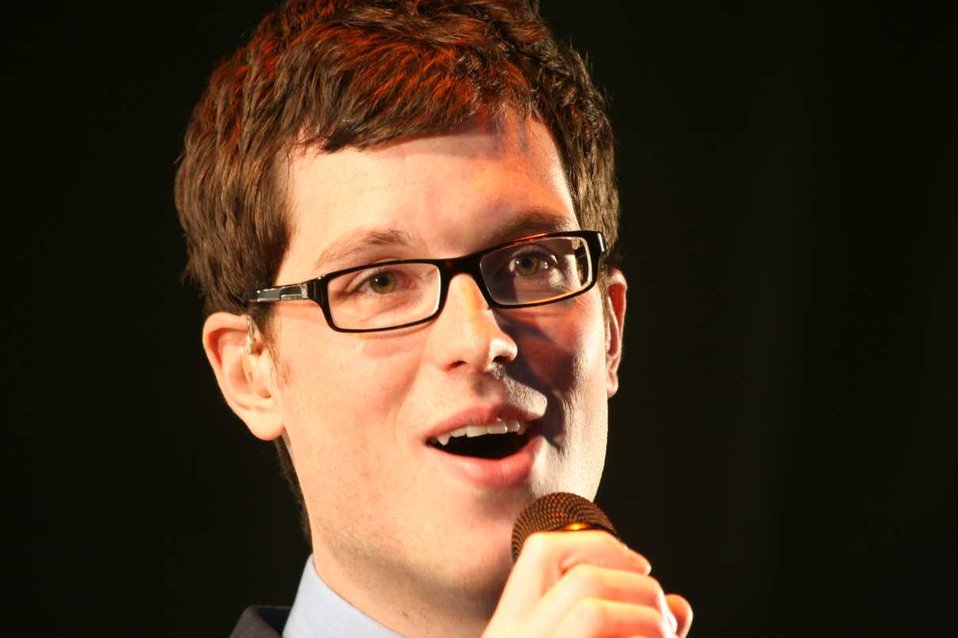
G4 Image Last Ever Concert Image: Peter French, Flying Tigers Studio www.flyingtigers.co.uk